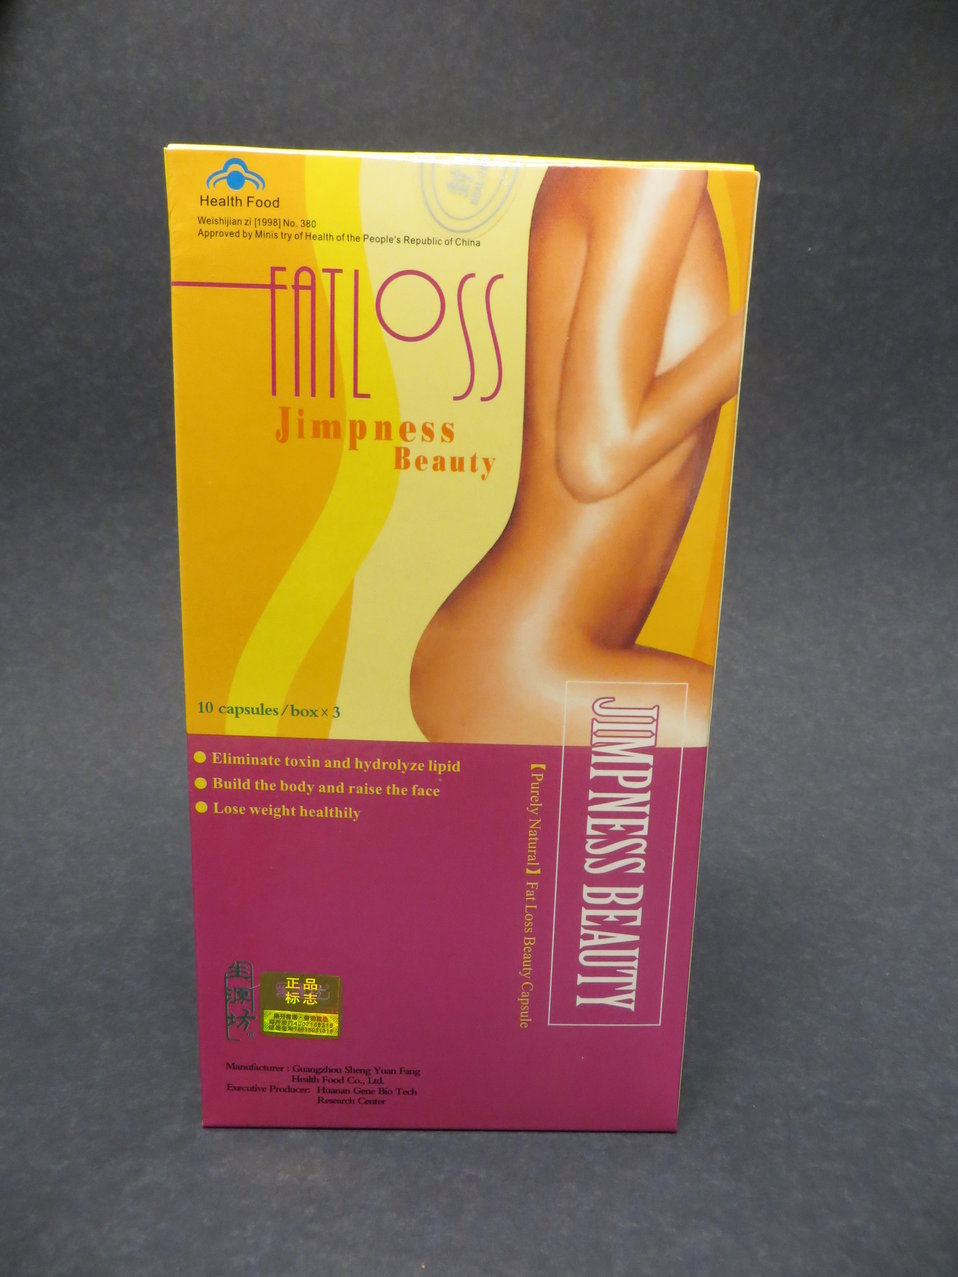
Jimpness Beauty Fat Loss Capsules

November 7, 2013 - The FDA is advising consumers not to purchase or use 'Jimpness Beauty Fat Loss Capsules ,' a product promoted and sold for weight loss. The product was found to contain undeclared sibutramine and phenolphthalein. For more information, go to www.fda.gov/drugs/resourcesforyou/consumers/buyingusingme...

And read this Consumer Update: Beware of Fraudulent ‘Dietary Supplements’